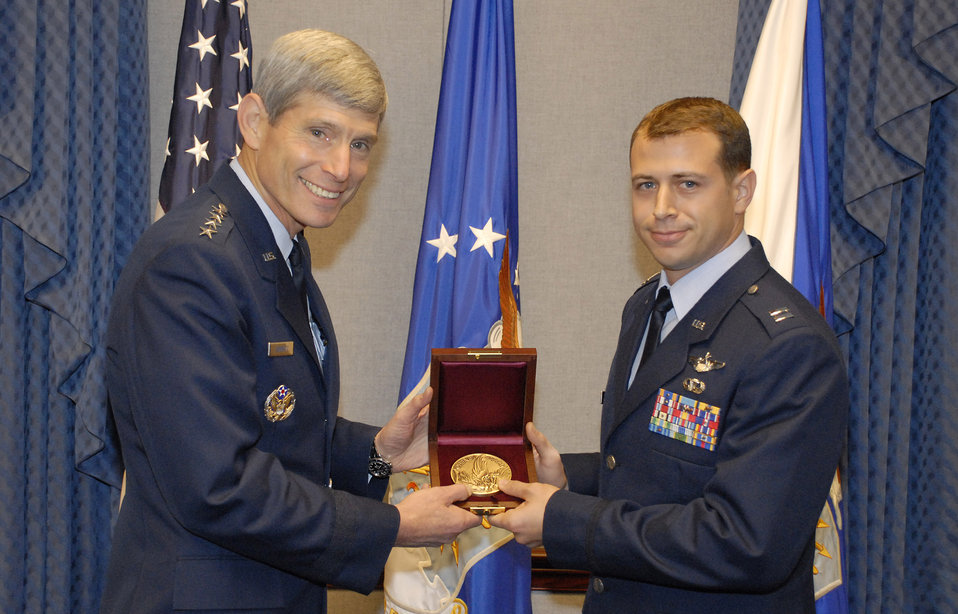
Ramstein pilot receives Cheney Award

Air Force Chief of Staff Gen. Norton Schwartz presents Capt. Daniel Santoro with the Cheney Award Oct. 8, 2009 at the Pentagon. Captain Santoro's leadership and foresight led his squadron to successfully complete 29 missions, delivering 95 passengers and 211 tons of humanitarian aid to the war-torn country of Georgia, following an August 2008 Russian invasion. Capt. Santoro is a C-130E Hercules instructor pilot and the chief of tactics assigned to the 37th Airlift Squadron at Ramstein Air Base, Germany.